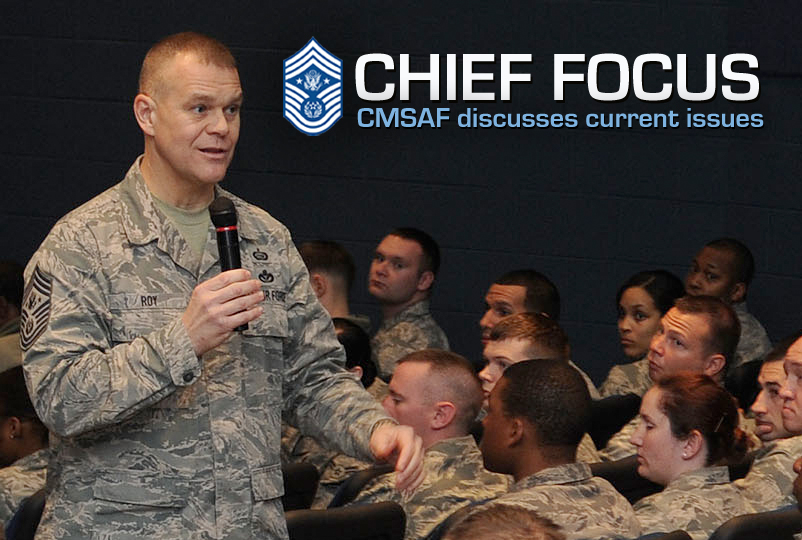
Chief focus